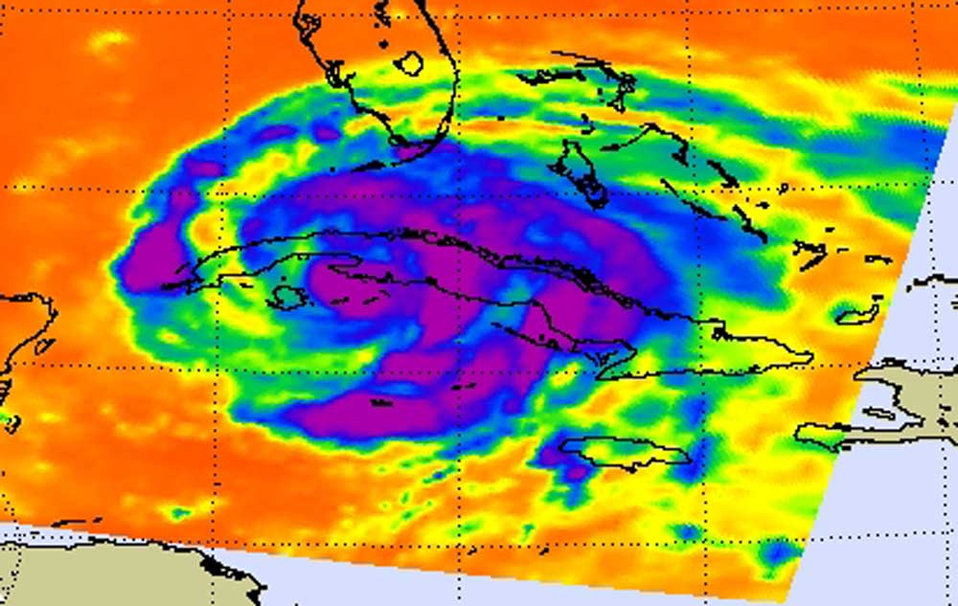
NASA's Aqua Satellite Captures an Impressive Shot of Ike's Cold CloudsThis infrared image of Hurricane Ike was created by data from the Atmospheric Infrared Sounder (AIRS), an instrument that flies aboard NASA's Aqua satellite. The image was created on Sept. 9 at 7:11 UTC (3:11 a.m. EDT), just minutes before the CloudSat image above, while he was over western Cuba.